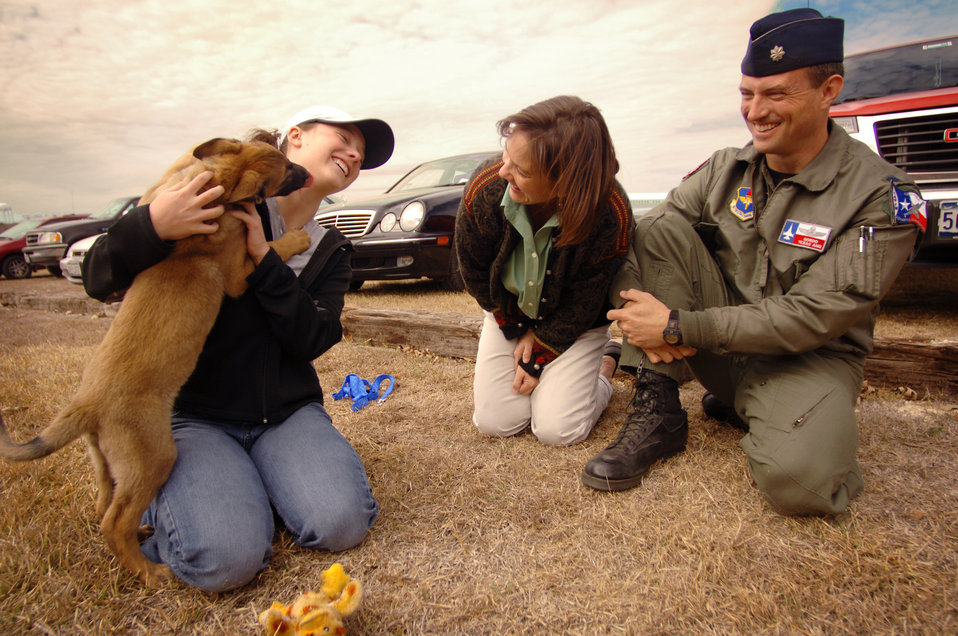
Adopting

LACKLAND AIR FORCE BASE, Texas (AFPN) -- Lt. Col. Gordon Clemens, his daughter, Katie, and wife, Liz, get to know Atticus, their newly adopted 9-week-old Belgian Malinois. Nearly 80 puppies are adopted each year by families to give them human interaction before they are selected for military working dog training.